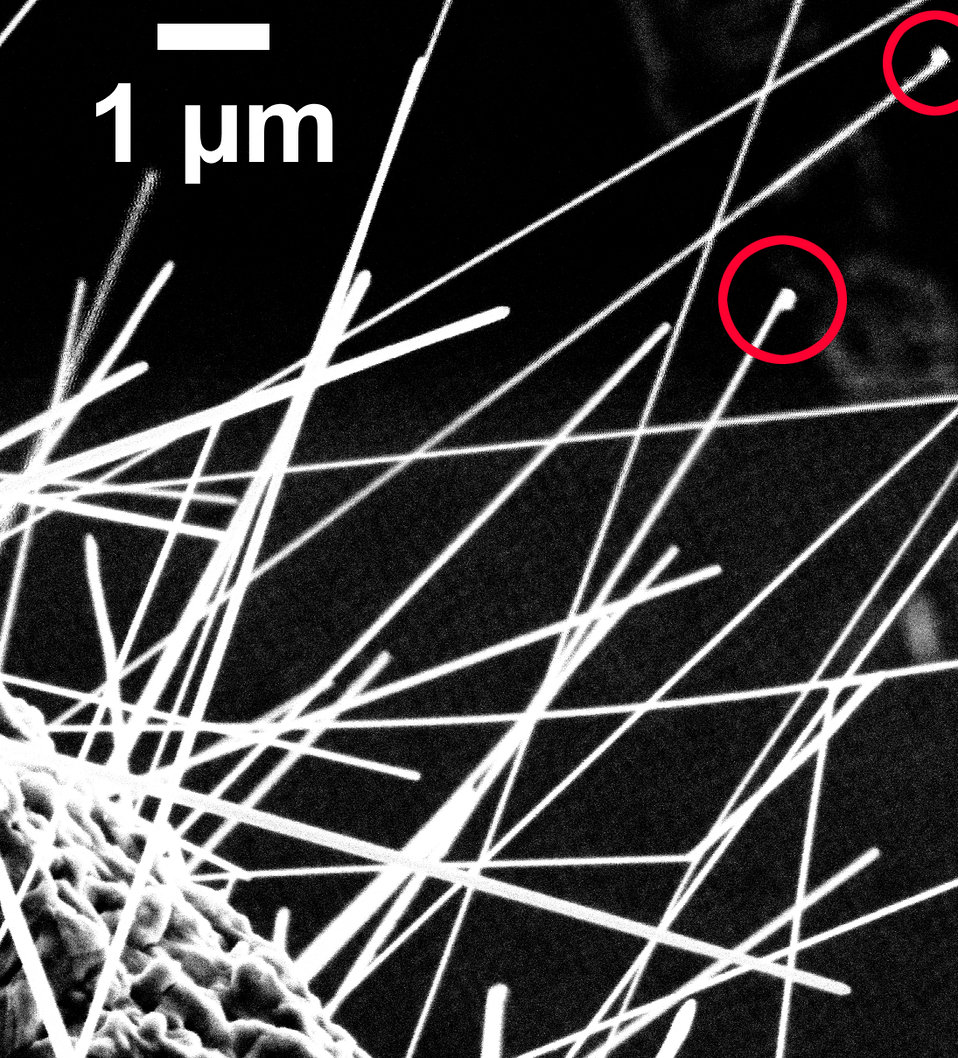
Nanowires

ZnO nanowires to grow out of the circular copper substrate in all directions, as seen in this scanning electron micrograph. Detail image shows copper droplets at the tip of some nanowires.